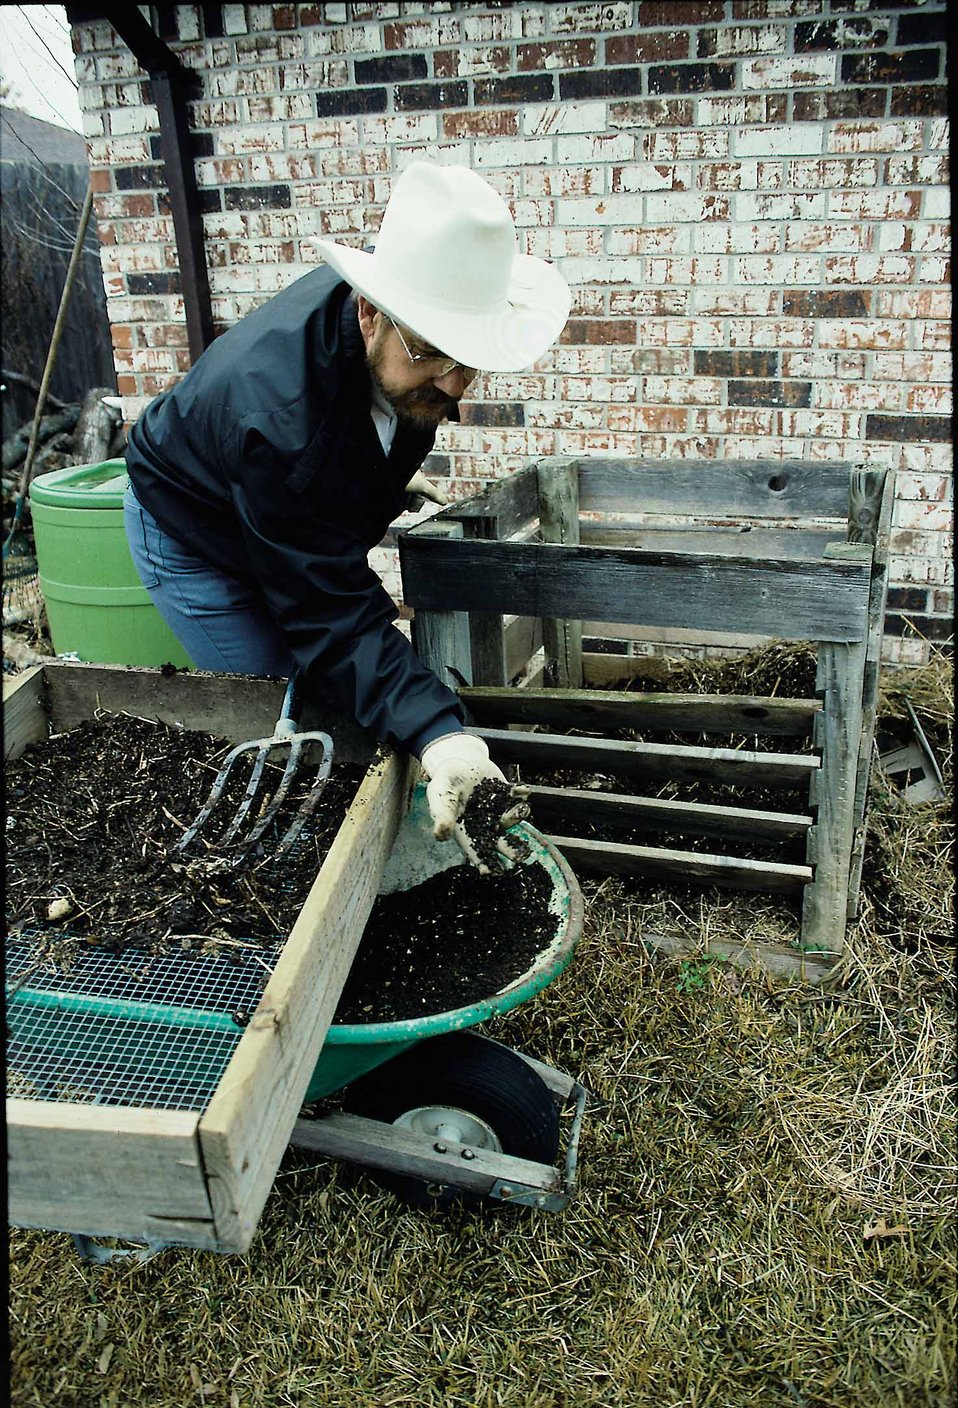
A homeowner sifts soil made from his compost bin in background. Composting is an excellent way to recycle household and yard wastes.